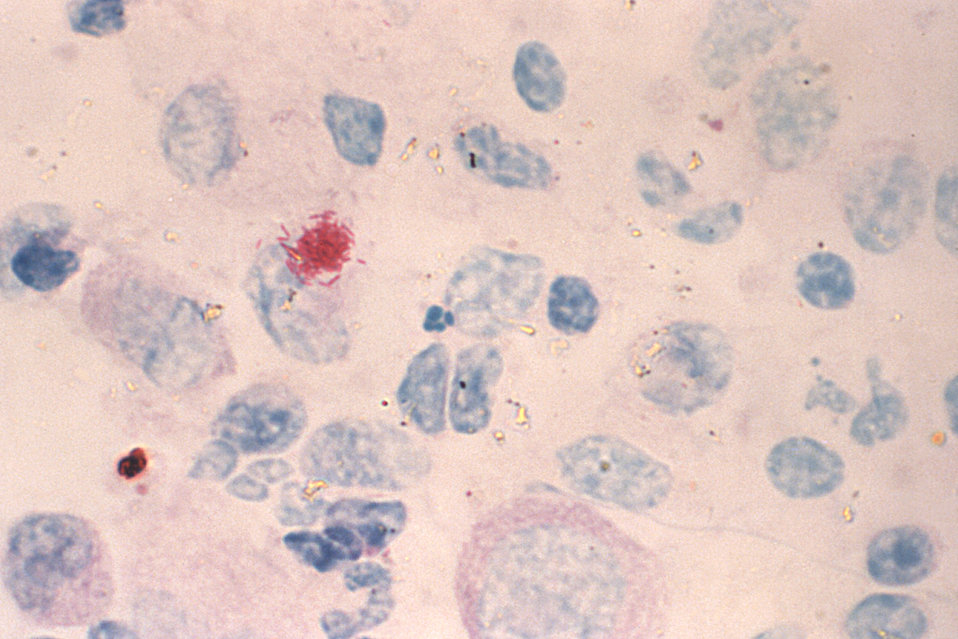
This micrograph depicts a cluster of Gram-negative Legionella pneumophila bacteria within a tissue sample taken from a victim of the 1976 Legionnaires' disease outbreak in Philadelphia.